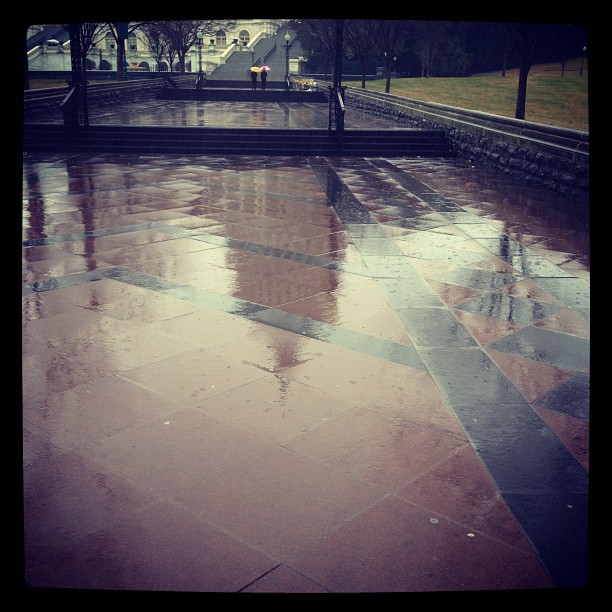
Rainy leap day at the Capitol.